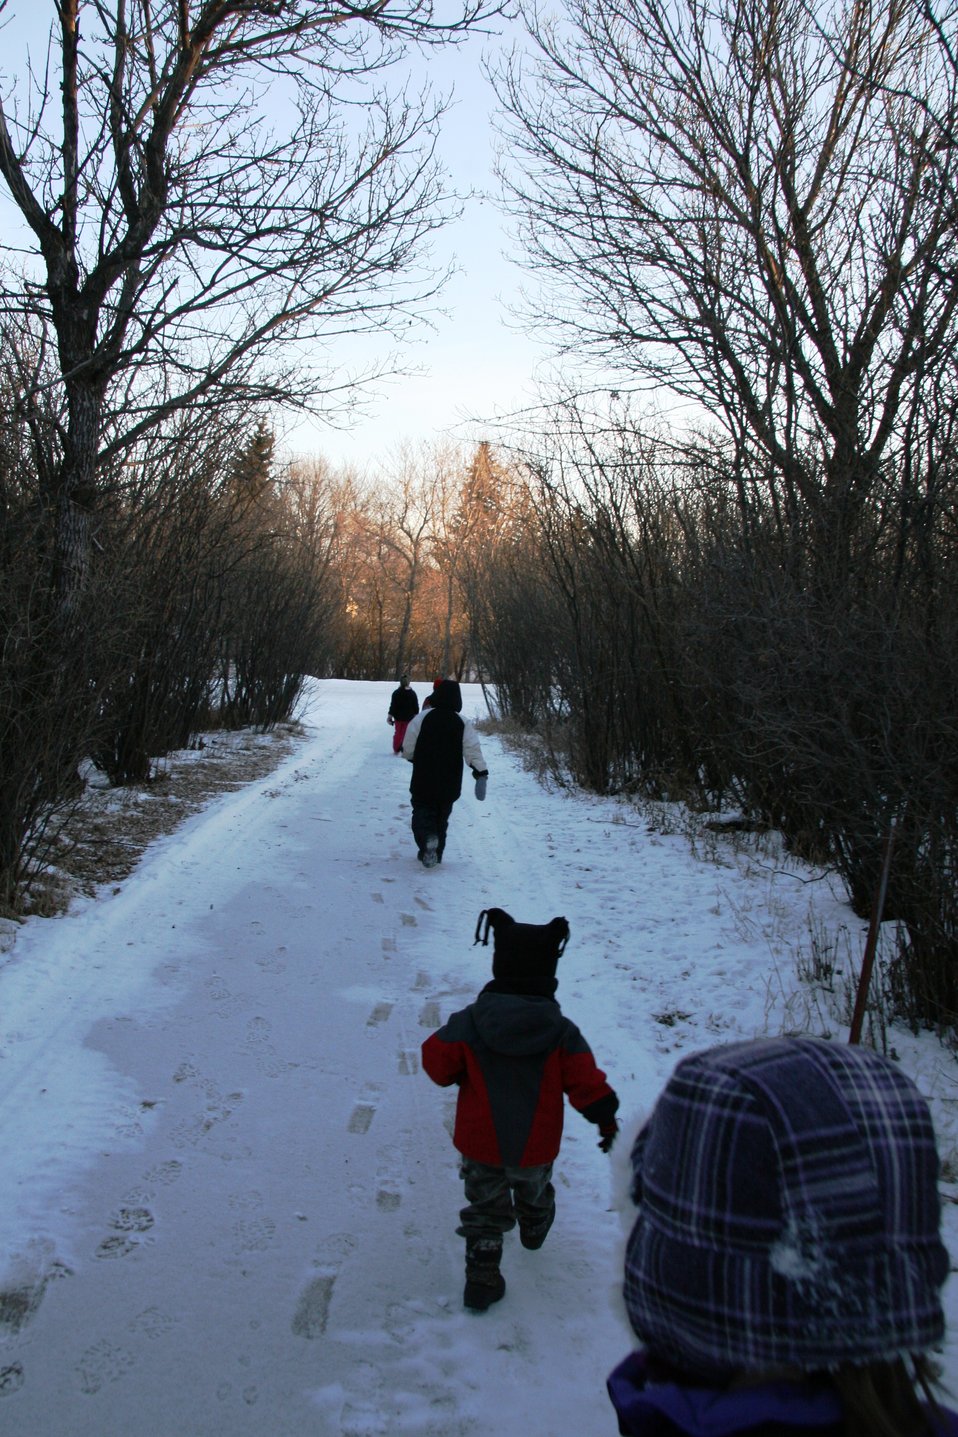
CBC4kids Birdwalk

Making tracks back to Refuge Headquarters for hot chocolate and cookies!